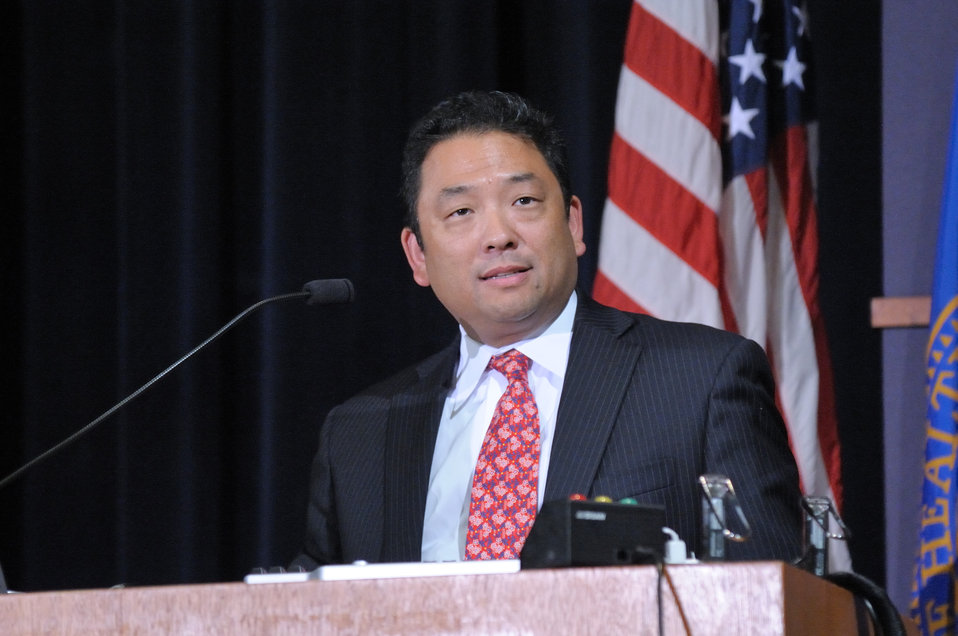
David Mineta (Deputy Director of Demand Reduction, White House Office of National Drug Control Policy) speaks at NIDA’s Addiction Performance Project, held Aug 5, 2011 on the NIH Campus